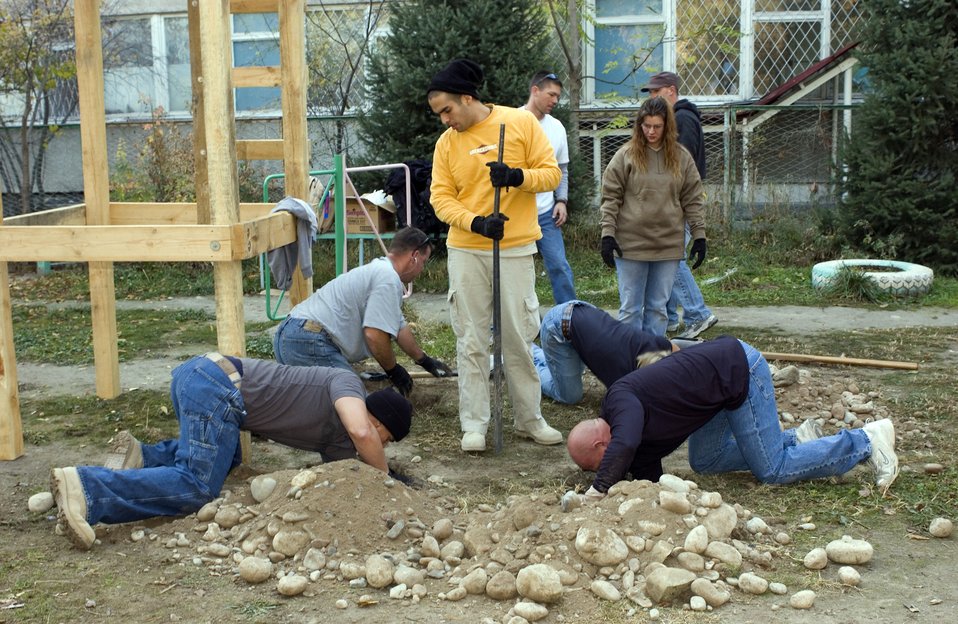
Cancer kids

BISHKEK, Kyrgyzstan (AFPN) -- Airmen of the Manas Air Base Outreach Society dig holes in the rocky soil outside the children's cancer center to anchor a new play fort they donated. The Airmen volunteer their day off to do the work at the center.